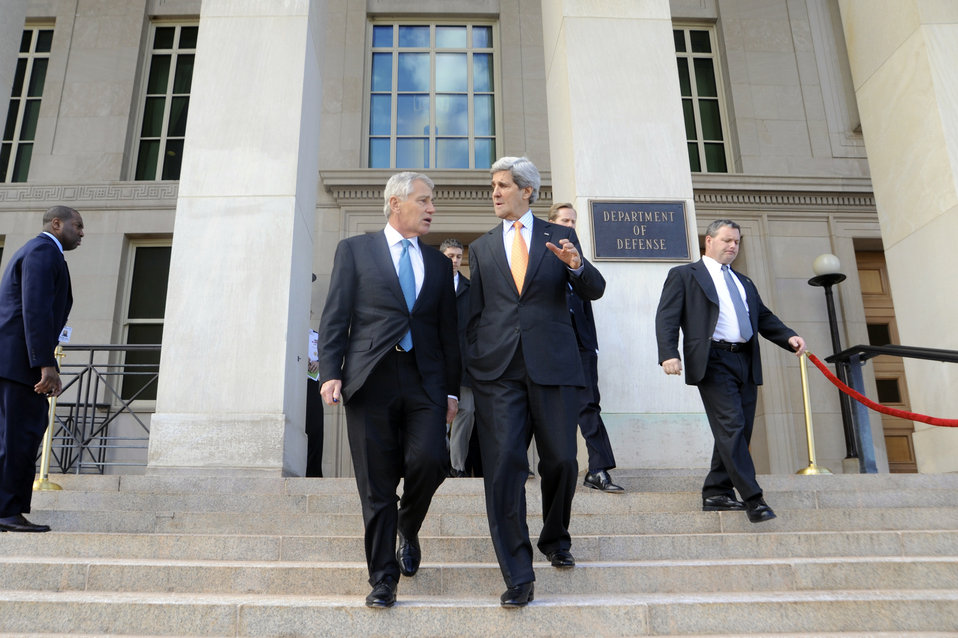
Secretaries Kerry, Hagel Speak After Pentagon Meeting

U.S. Secretary of State John Kerry speaks with U.S. Secretary of Defense Chuck Hagel as the two walk down the Pentagon's front steps after addressing the nation's top military commanders on January 16, 2014.